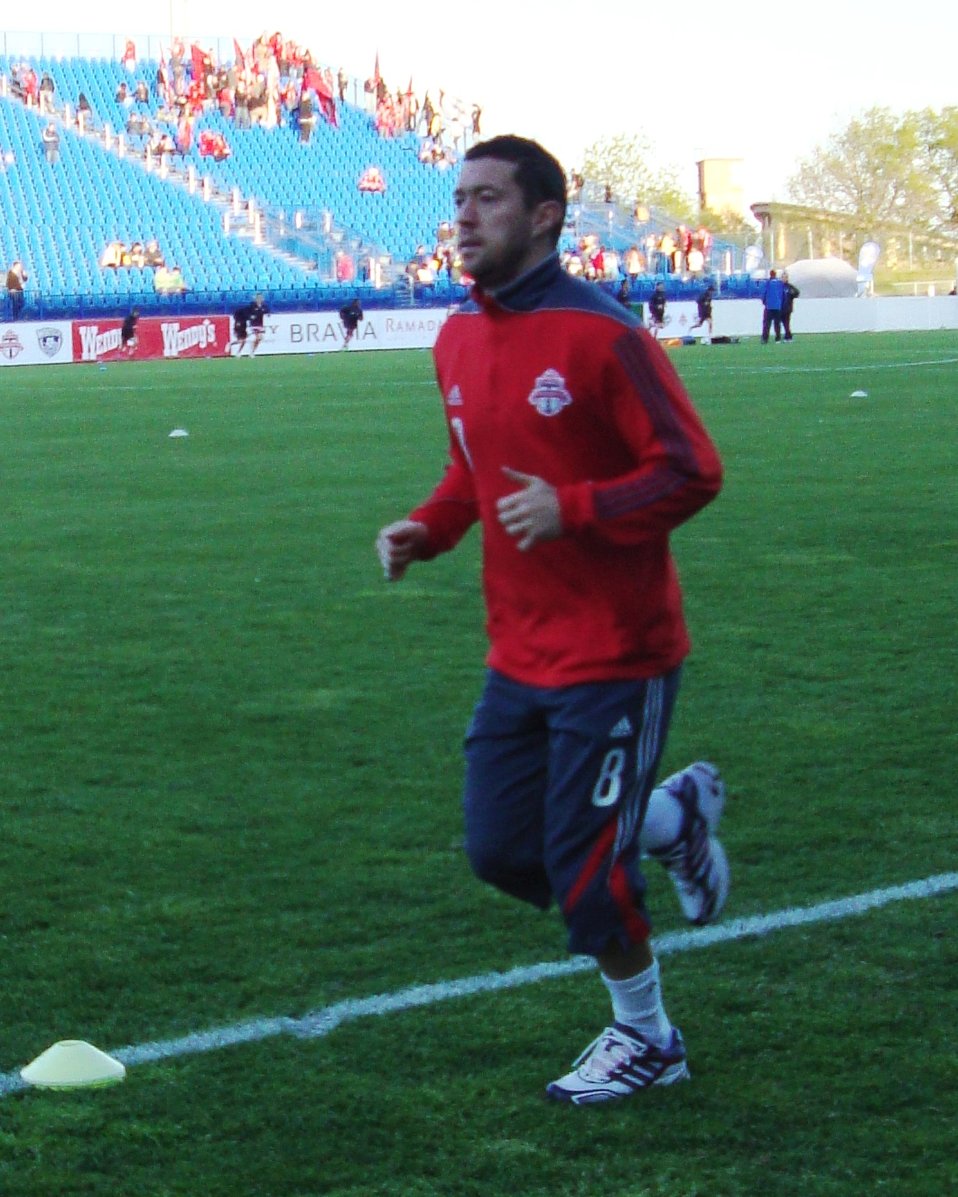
Dan Gargan